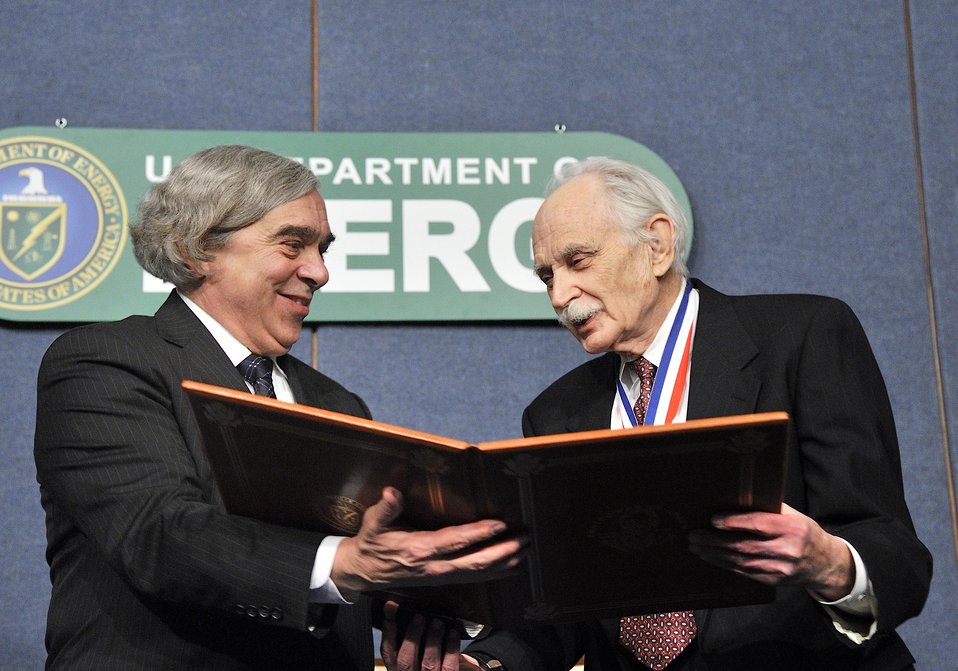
SECRETARY E. MONIZ PRESENTS ALLEN J. BARD WITH THE ENRICO FERMI AWARD ON FEBRUARY 3, 2014 AT THE U.S. DEPARTMENT OF ENERGY